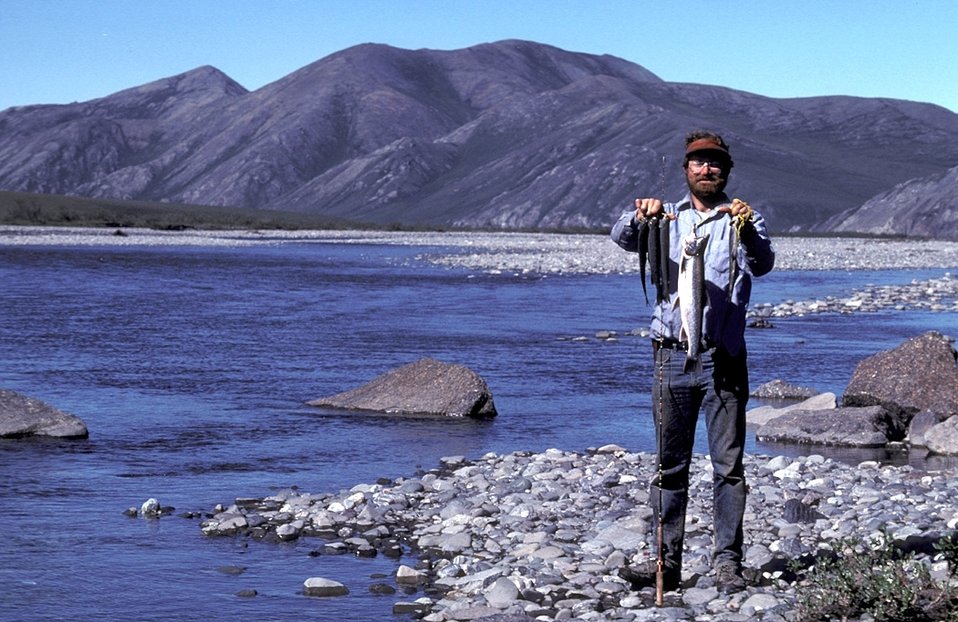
Kongakut River Fishing, Arctic NWR

A fisherman displays his catch from the Kongakut River in the Arctic National Wildlife Refuge. (USFWS)